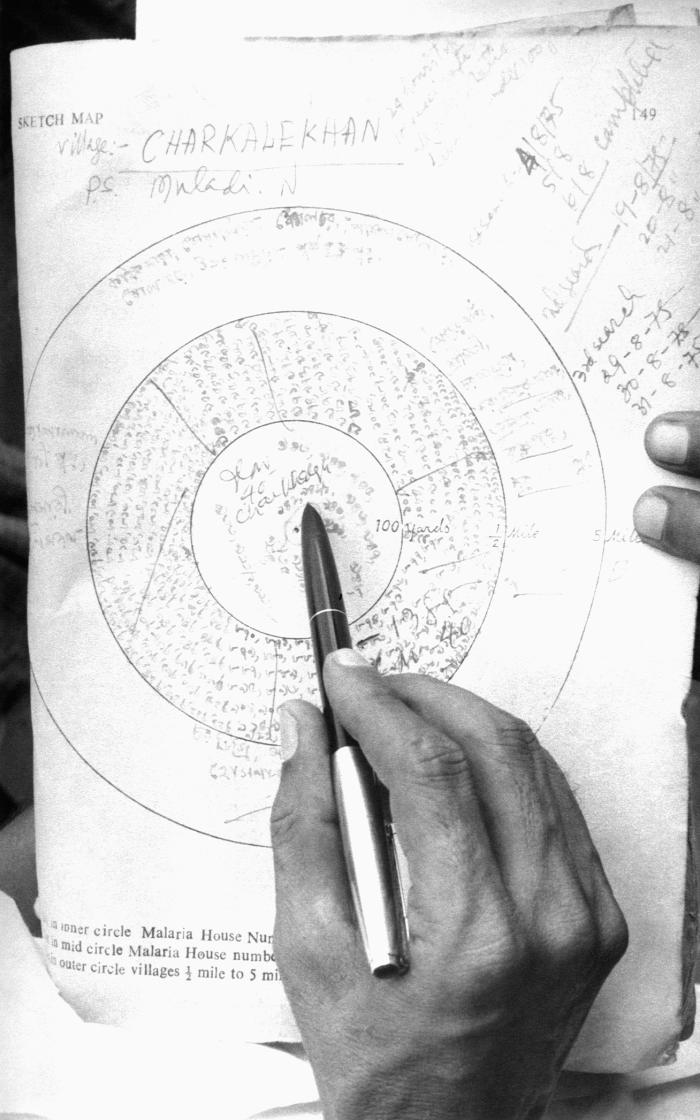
Maps were integral to achieving a successful smallpox eradication campaign outcome, for it enabled public health practitioners, and local volunteers to track smallpox cases once discovered, and inhabitants who'd been in contact with such cases using epidemiologically sound science. There were different types of maps that arose during the process, and this image depicted a detailed view of a 'Containment map' that was created using what is termed a 'circular mapping' technique. It was used when charting a house to house search throughout a community, and discovering a confirmed smallpox case.